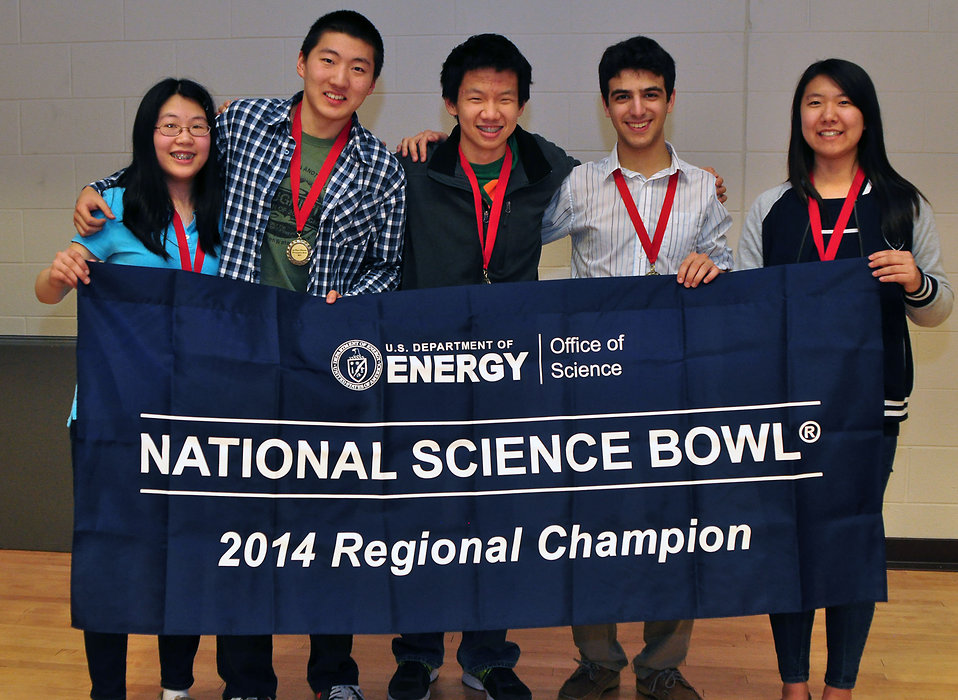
First Place Oak Ridge HS 2014 TN DOE Science Bowl

14-026 DOE photo Lynn Freeny 2-22-2014First Place Oak Ridge Left to Right Tina Wang, Gaibo Zhang, Albert Xue, Aram Bejnood, Boonie Moon